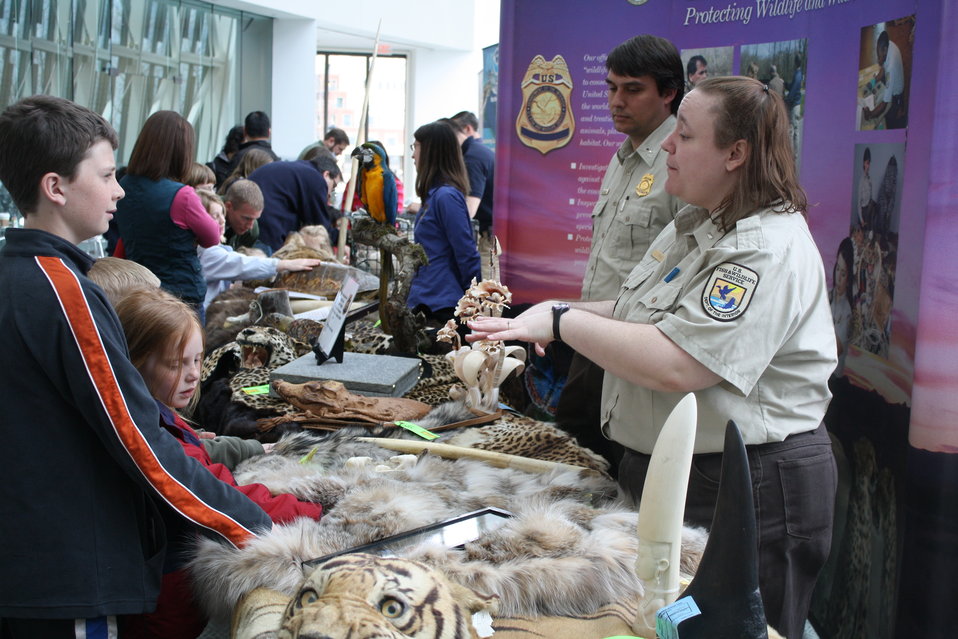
Wildlife Inspectors explaining exhibits